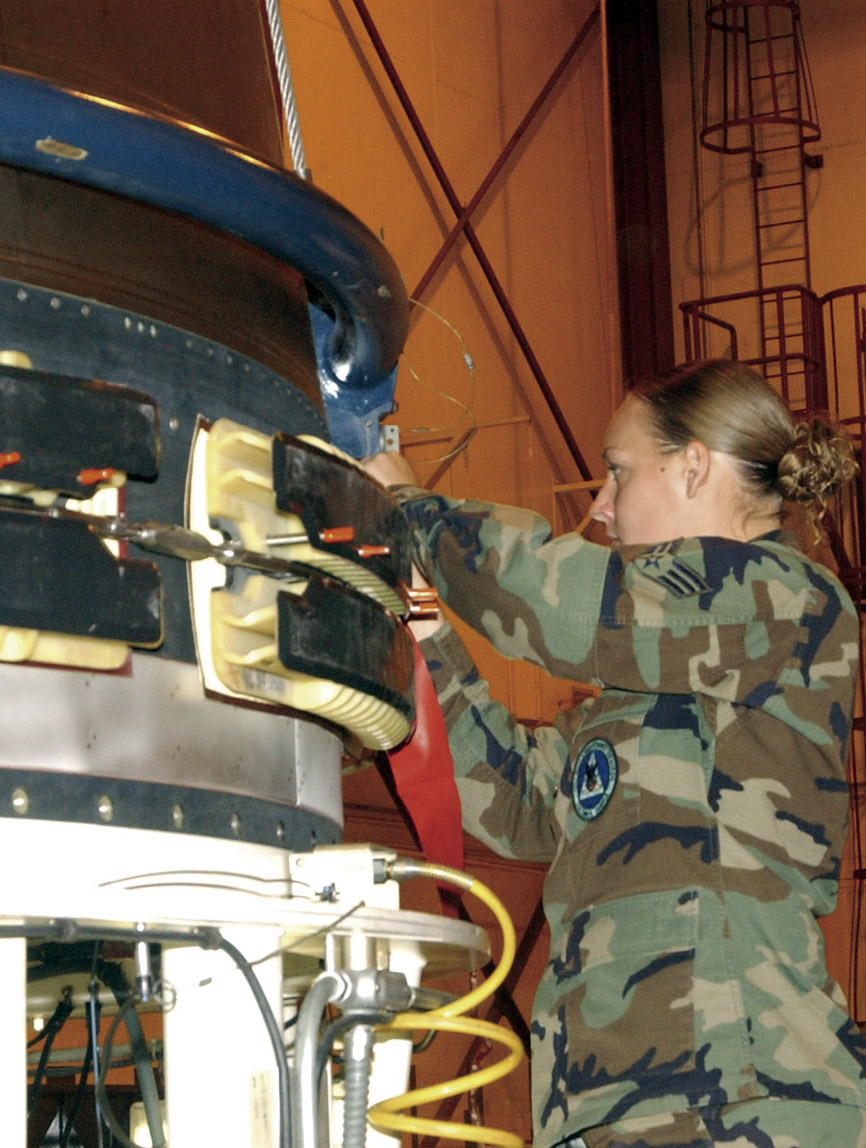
Peacekeeper deactivation

F.E. WARREN AIR FORCE BASE, Wyo. -- Senior Airman Sarah Holznagel works on a Peacekeeper missile. The last Peacekeeper will be deactivated Sept 19. She is a maintainer with the 90th Missile Maintenance Squadron here.